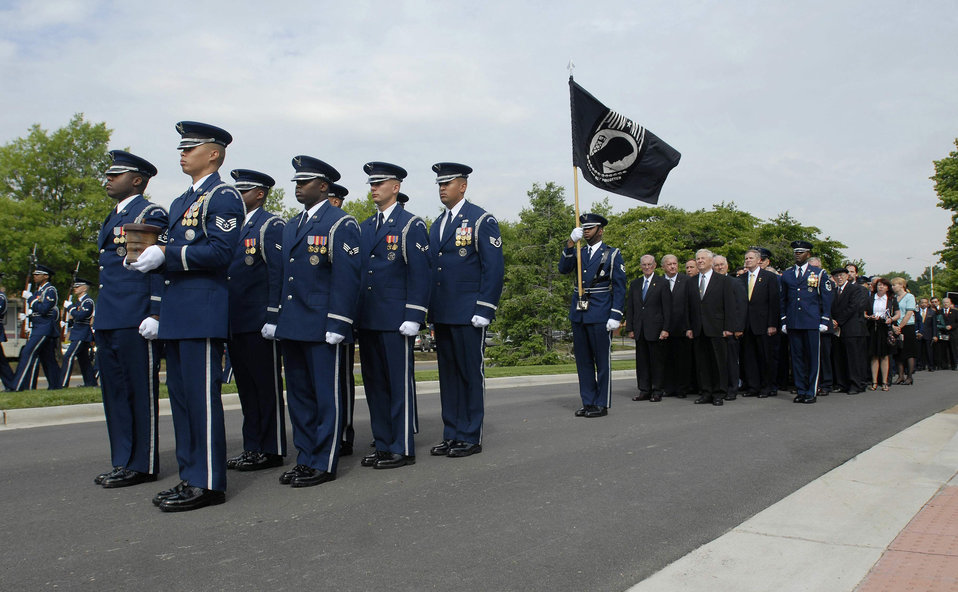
Chief Airey laid to rest at Arlington Cemetery

U.S. Air Force Honor Guard members pause with the remains of Shirley Airey during the memorial service for Chief Master Sgt. Paul W. Airey at Arlington National Cemetery, Va., May 28. Chief Airey and his wife Shirley's remains were buried together at Arlington National Cemetery. Chief Airey, serving 27 years, became the first Chief Master Sergeant of the Air Force April 3, 1967, following his installment by then Secretary of the Air Force Harold Brown and Air Force Chief of Staff Gen. John P. McConnell. Chief Airey retired from active duty on Aug. 1, 1970 and died March 11 in Panama City, Fla.